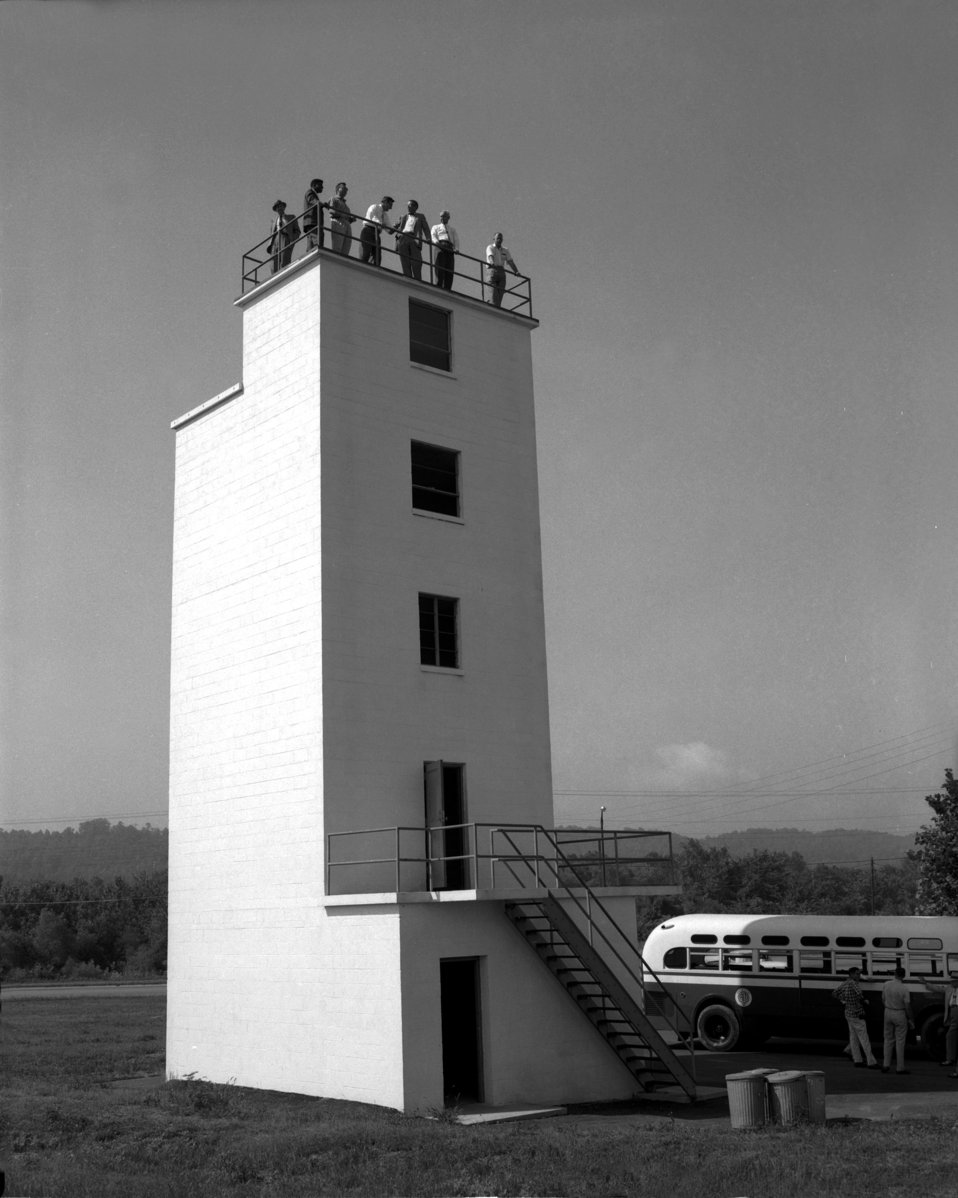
Town Council Visiting Oak Ridge Fire Department

59-0423 DOE photo by W.E. Hall

Town Council Visiting Oak Ridge Fire Department Oak Ridge Tennessee 6/25/1959